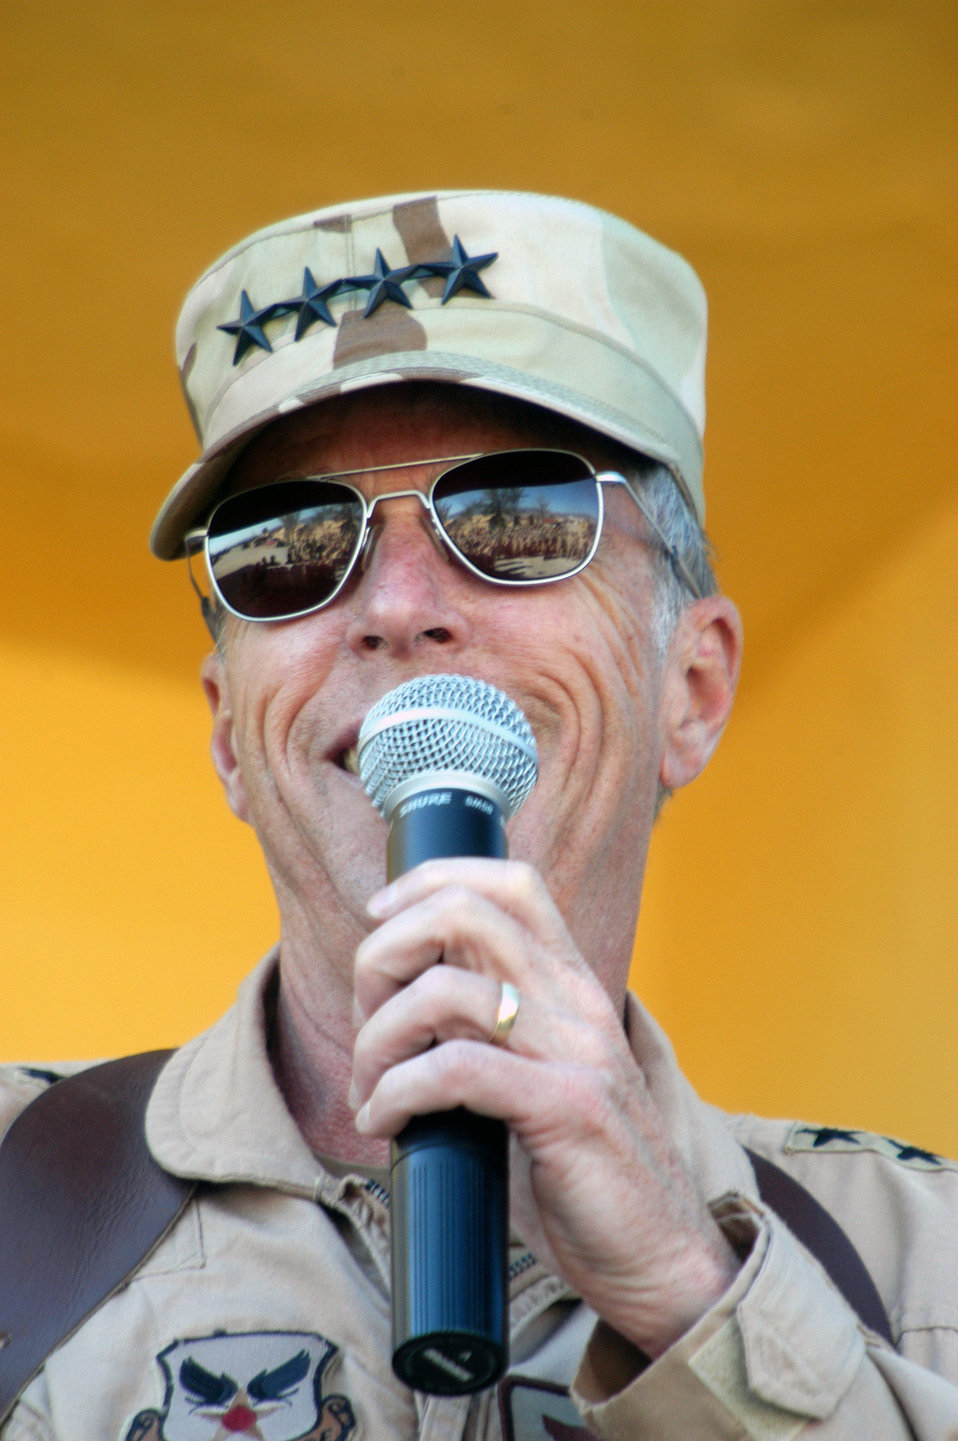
Foglesong visit

OPERATION ENDURING FREEDOM -- Gen. Robert H. Foglesong, Air Force vice chief of staff, talks to a crowd of airmen in Air Force Village at Bargram Air Base, Afghanistan, on May 4. Foglesong toured the compound, received mission briefings and talked with airmen here about the current state of the expeditionary air and space force. There are about 500 airmen deployed to the base.